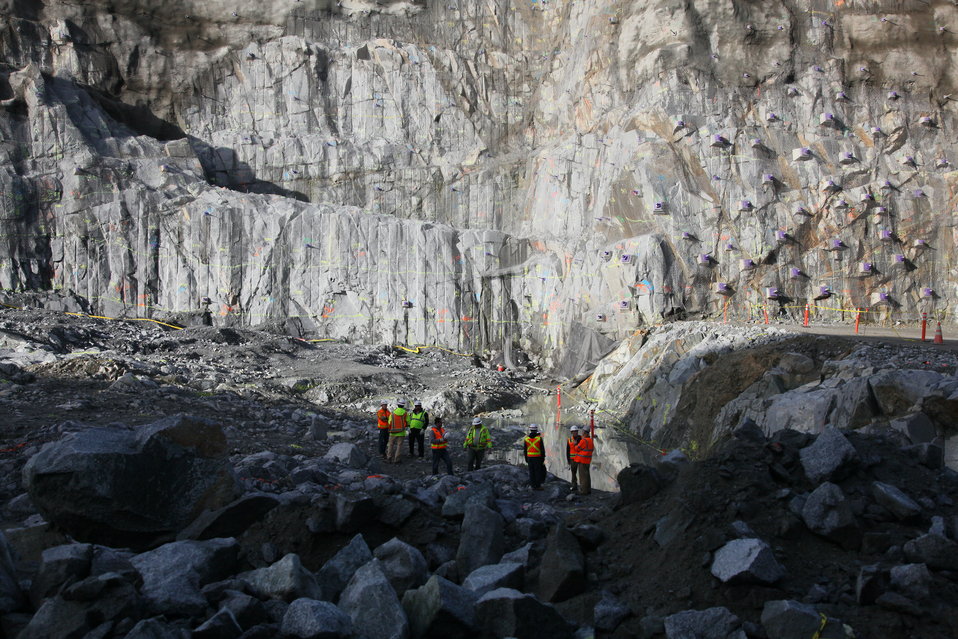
Evaluating the Folsom Dam auxiliary spillway foundation

A team of geologists from the U.S. Army Corps of Engineers Sacramento District meets with a consultant review board at the excavation site for the Folsom Dam auxiliary spillway in Folsom, Calif., Feb. 29, 2012. The board, made up of highly-qualified geology, geotechnical and structural experts, was hired to evaluate the integrity of the spillway’s foundation - a requirement for Corps’ civil works construction projects intended to reduce risk to lives to ensure they meet the highest safety standards. The spillway will allow Folsom Dam to release water sooner and more safely. The project is part of the Folsom Dam Joint Federal Project, a joint effort of the U.S. Army Corps of Engineers Sacramento District, the U.S. Bureau of Reclamation, the Central Valley Flood Protection Board and the Sacramento Area Flood Control Agency to improve the safety of the dam and reduce flood risk for the greater Sacramento area.